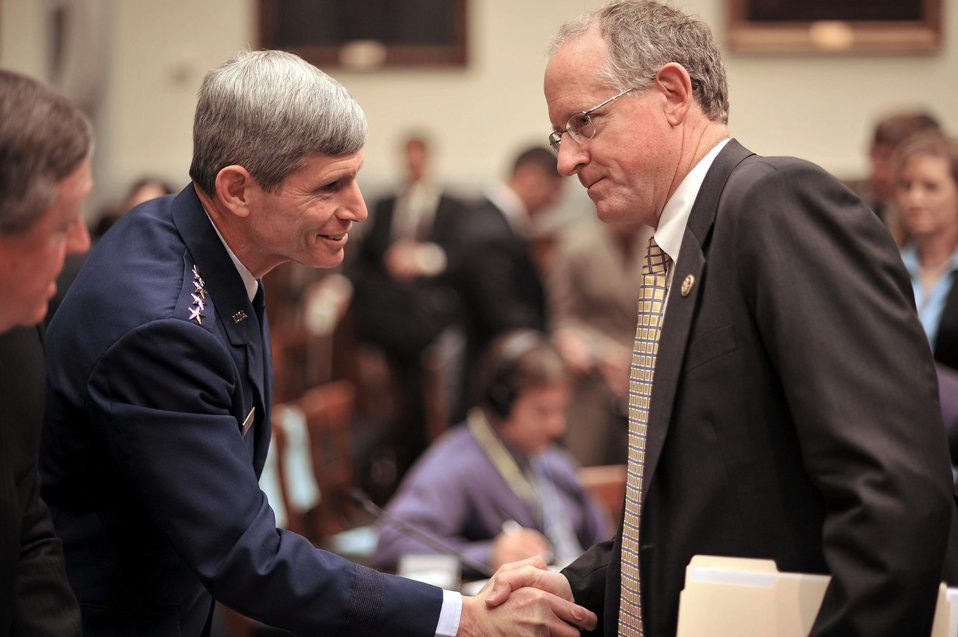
Leaders issue posture statement

Air Force Chief of Staff Gen. Norton Schwartz (left) is greeted by Congressman Mike Conaway after giving testimony with Secretary of the Air Force Michael Donley before the U.S. House Armed Services Committee on the current Air Force posture May 19 in the Rayburn Building in Washington, D.C. The two Air Force leaders spent most of the week before both the House and Senate providing feedback with regard to the upcoming budget and current and projected capabilities.